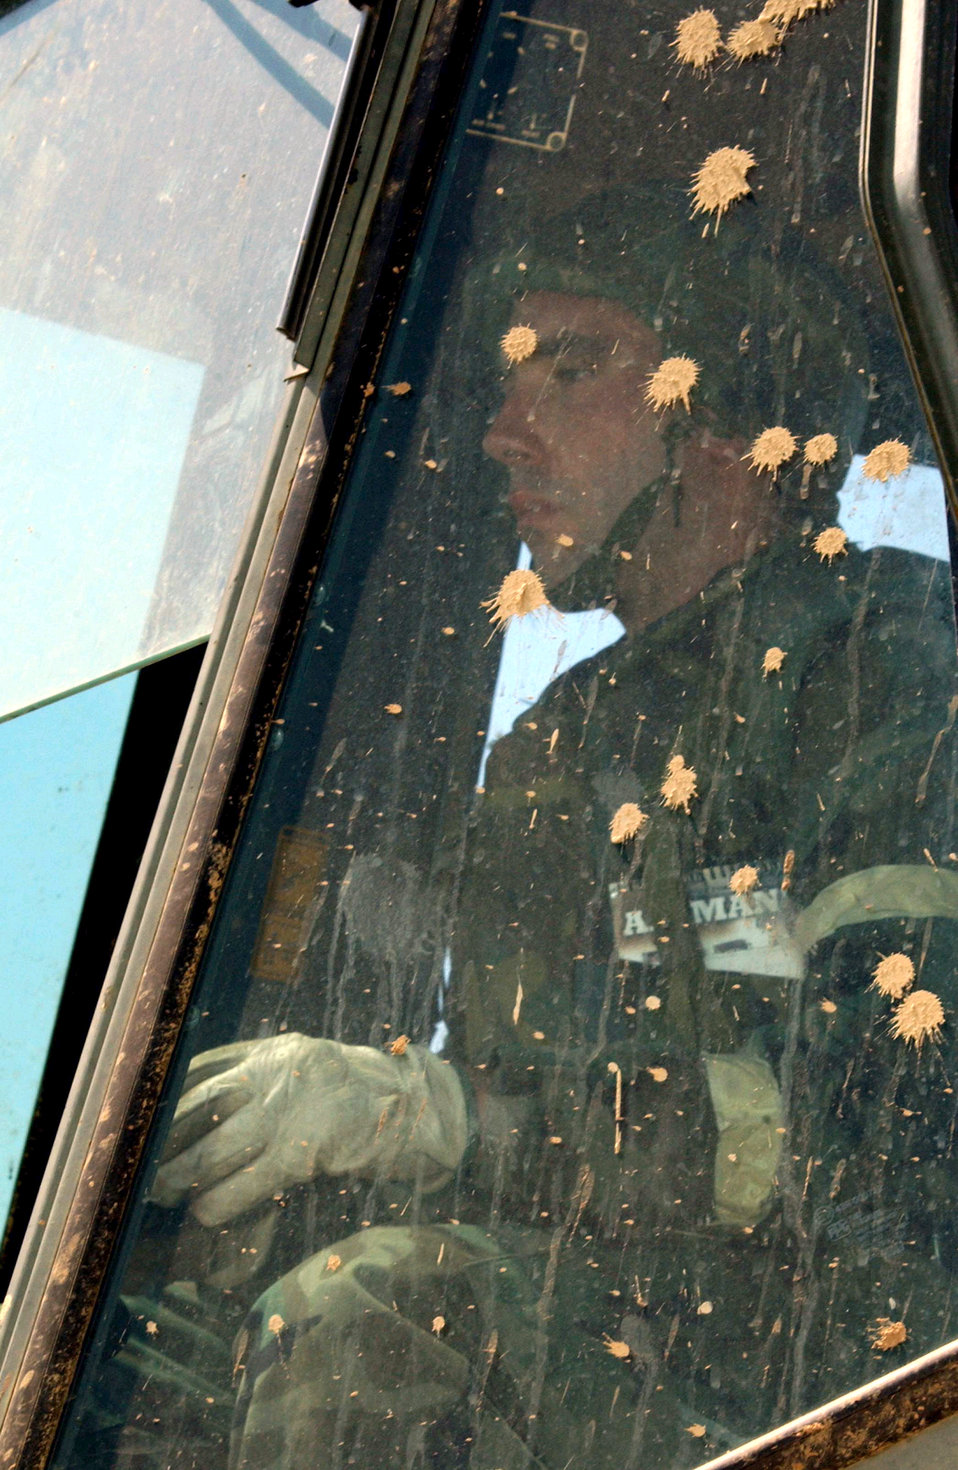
A dirty job

MINOT AIR FORCE BASE, N.D. -- Staff Sgt. Robert Finton excavates a simulated runway during exercise Prairie Knight 04-4 here June 28. Sergeant Finton is a member of the 5th Civil Engineer Squadron.